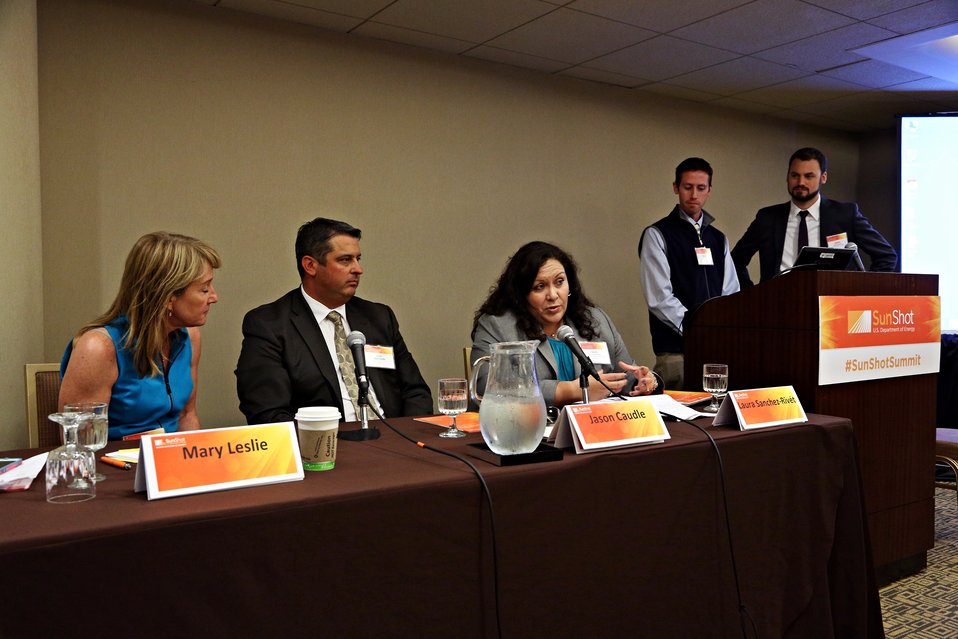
Breakout Sessions 14